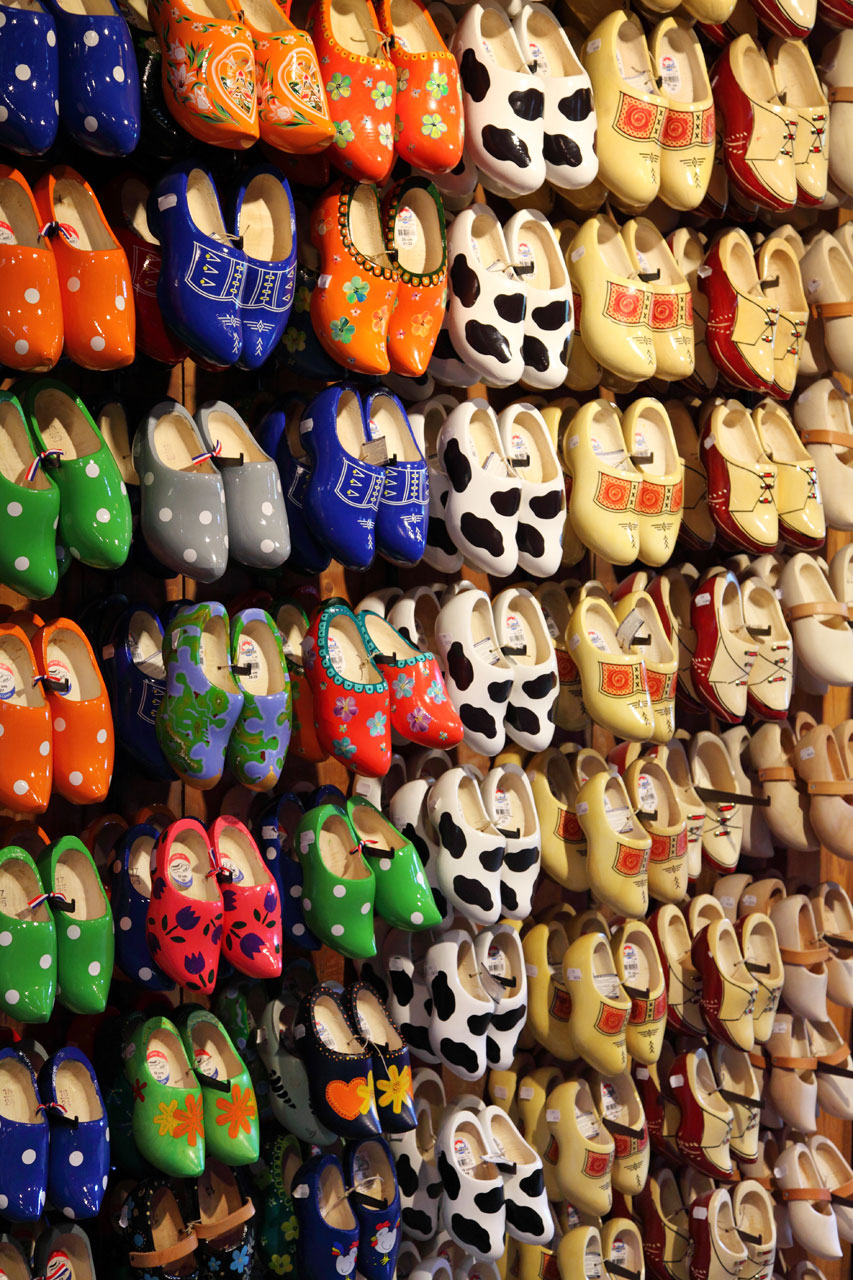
Colorful clogs

Colorful clog pattern in zaanse schans.